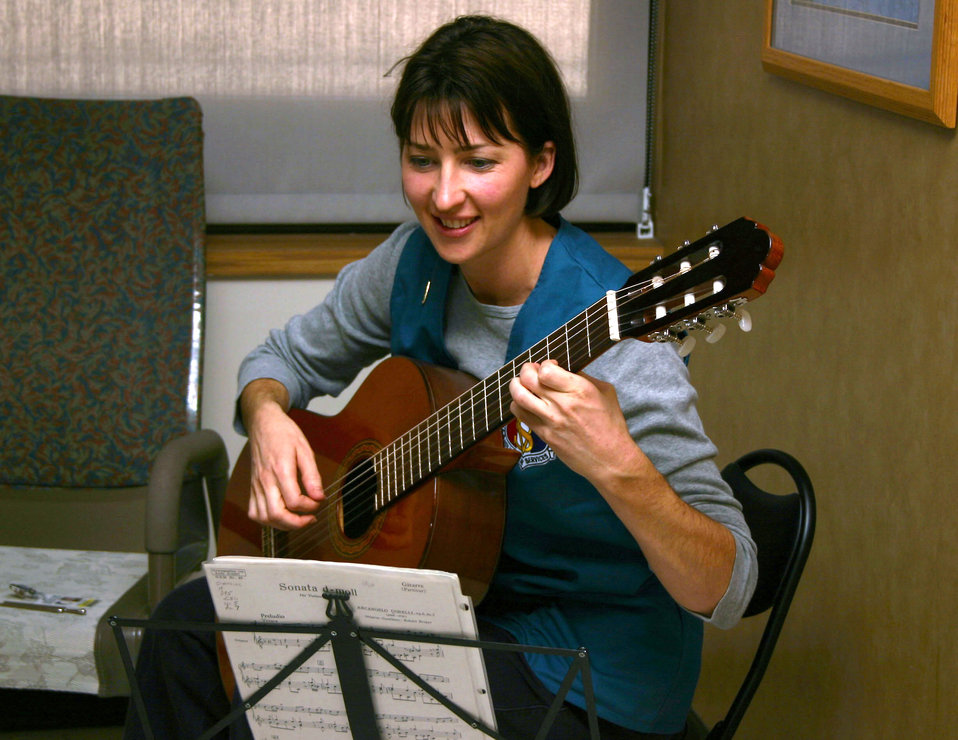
Good vibrations, music lends healing hand

LACKLAND AIR FORCE BASE, Texas -- Staff Sgt. Hannah Pralle plays classical guitar for patients at Wilford Hall Medical Center here as a volunteer musical therapist during her off-duty hours. The Arizona Air National Guardsman is currently assigned to the 59th Medical Wing as a student in a cardiopulmonary course. She has worked in the clinical music therapy setting for more than three years and is pursuing certification in the field.